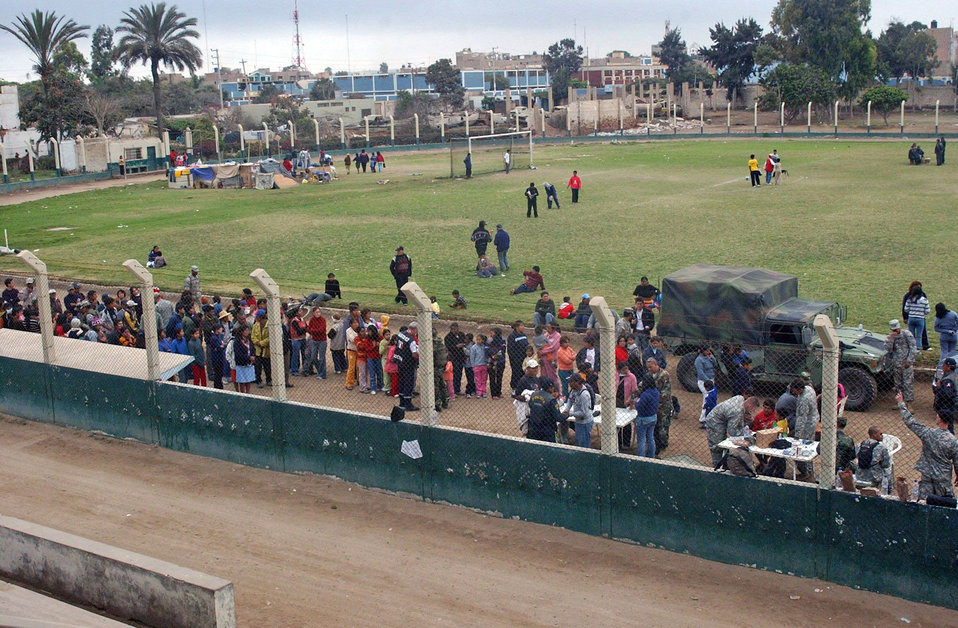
Servicemembers treats 1,300 patients in Peru

Crowds of people line up to receive medical care Aug. 20 at Pisco, Peru, from members of Joint Task Force-Bravo from Soto Cano Air Base, Honduras. The task force members are providing medical humanitarian care to the people affected by the 8.0 magnitude earthquake that struck the region Aug. 15, causing major damage as well as killing and injuring numerous people.